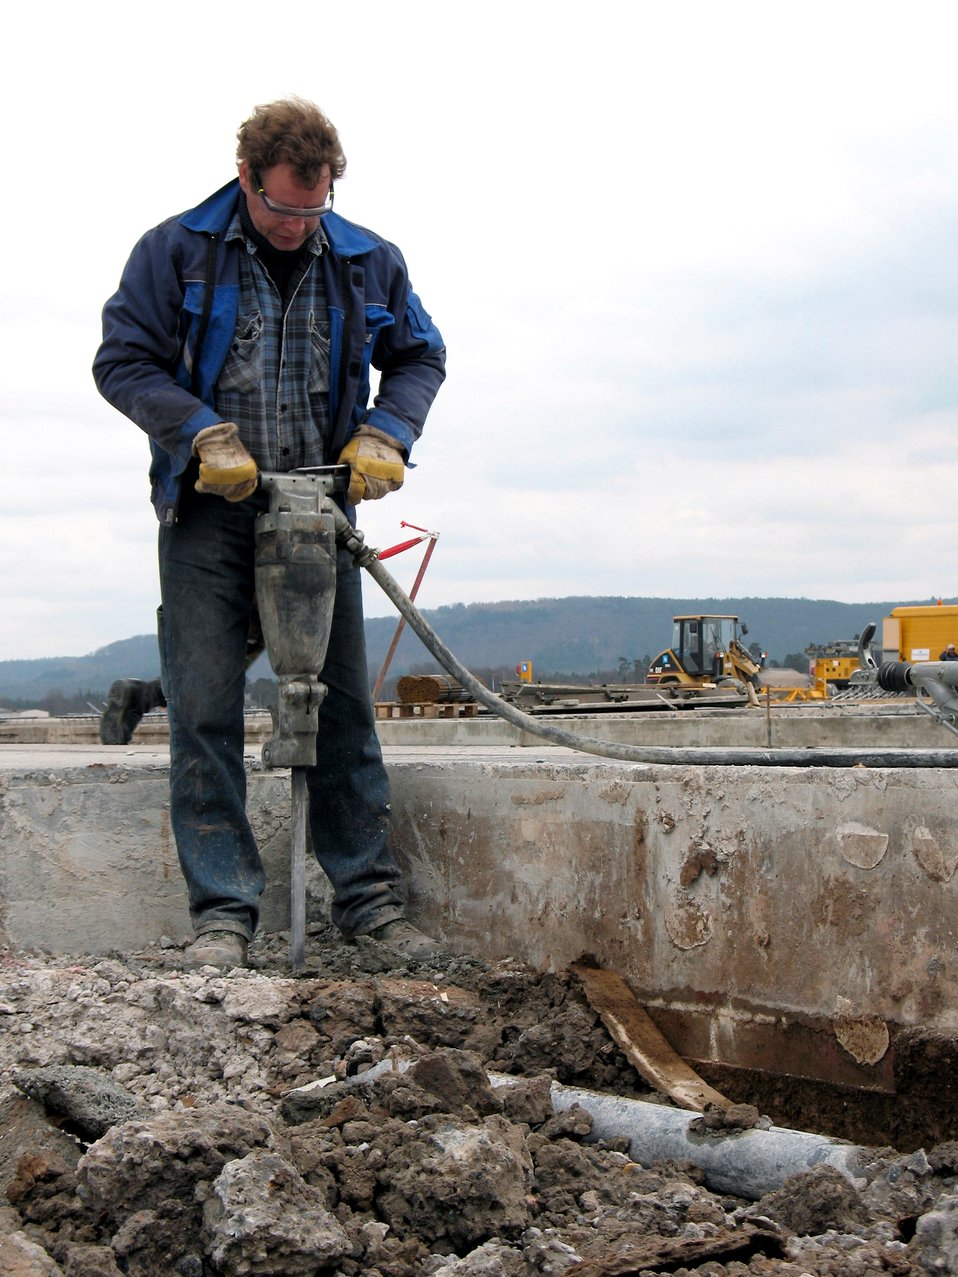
Ramstein's 50-year-old runway gets makeover

A German construction worker chisels away 50-year-old concrete from the north runway at Ramstein Air Base, Germany. After enduring hundreds of thousands of take-offs and landings, the runway is getting a make-over with fresh concrete and asphalt.